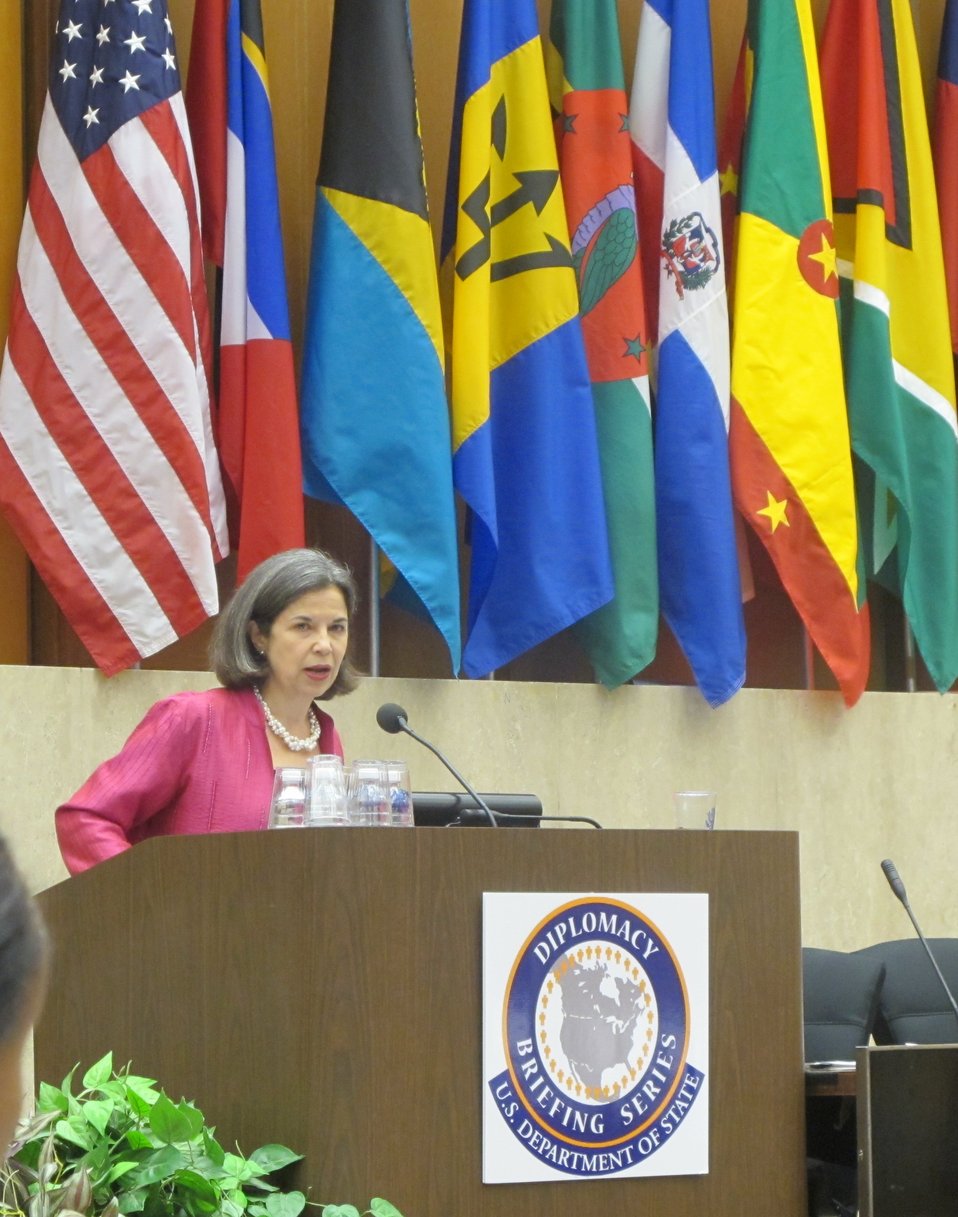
Under Secretary of State Ortero Addresses Caribbean Conference Participants

Under Secretary of State for Democracy and Global Affairs Maria Otero, addresses the Caribbean Conference participants on Cross Cutting Global Issues at the U.S. Department of State in Washington, D.C., on June 27, 2011.